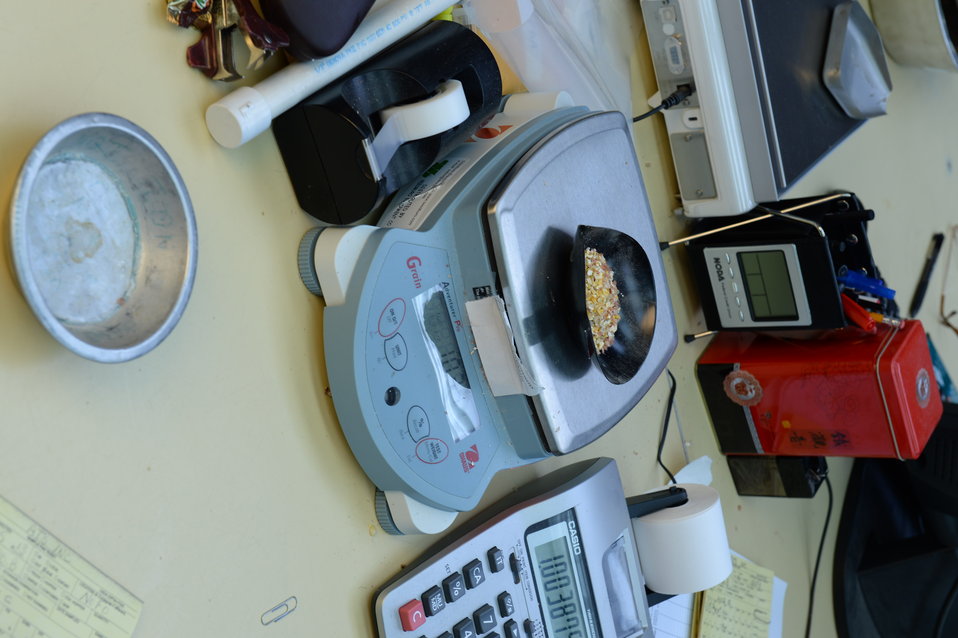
A U.S. Department of Agriculture (USDA) Grain Inspection, Packers and Stockyards Administration (GIPSA) Federal Grain Inspection Service (FGIS) scientist tests corn at the FGIS inspection laboratory in New Orleans, LA on Monday, Nov. 18, 2013.